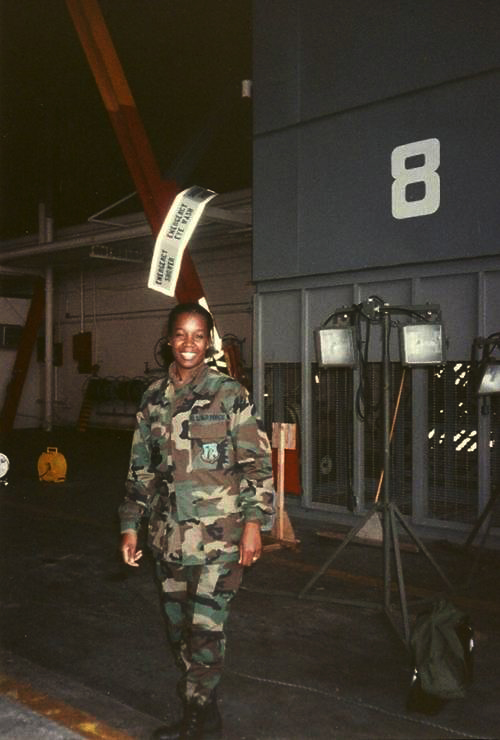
Vanessa Porter

Vanessa in the Human Resources Office is a U.S. Air Force Reserves retiree. She was on Active Duty from 1977 through 1981 and was assigned to Lackland Air Force Base for basic training, Sheppard Air Force Base for Tech School, Clark AB, Philippines and Altus, Ok. In the reserves from 1985 through 2002, she was stationed out of Langley Air Force Base in Virginia and Andrews Air Force Base in Maryland. Her career fields were Dental (17 years) and Laboratory Technicians (4 years). She retired as a Master Sergeant (E7).